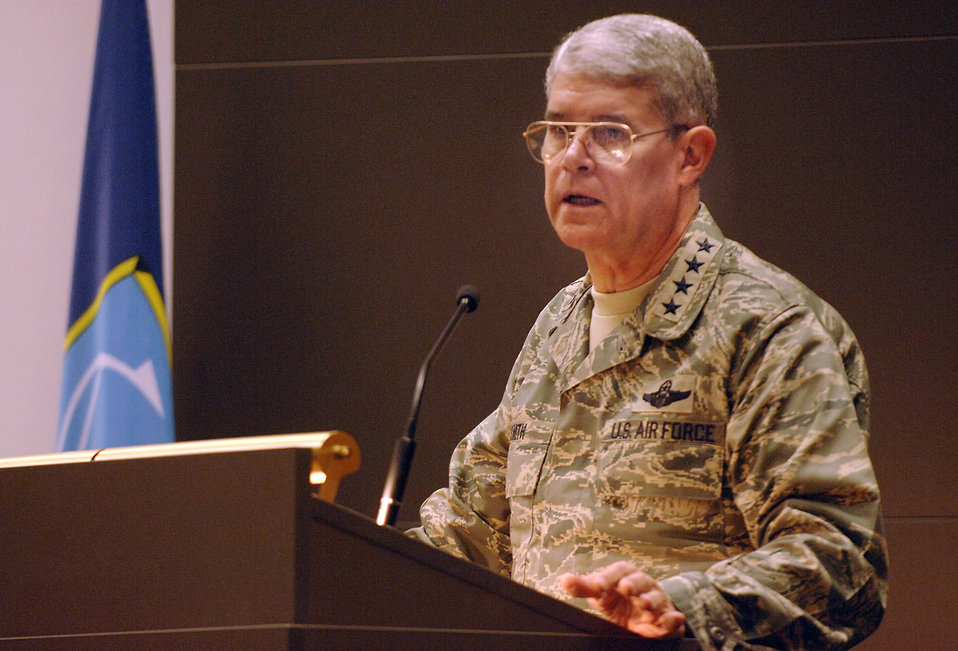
NATO Response Force works to improve communications

Gen. Lance L. Smith speaks to representatives from 26 NATO nations May 4 during the week-long NATO Response Force Exercise Allied Reach '07 at Allied Air Component Command Headquarters at Ramstein Air Base, Germany. The exercise examined the command and control, logistics and training of the NATO Response Force at the strategic and operational levels. General Smith is the commander, U.S. Joint Forces Command/NATO Supreme Allied Commander Transformation.